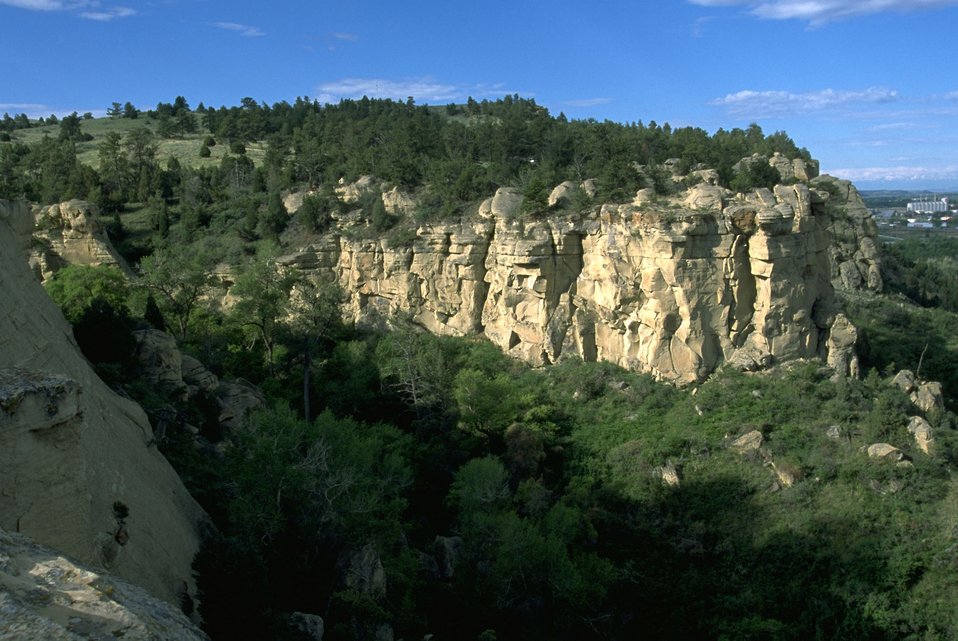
Sun shining on the sandstone cliffs in the Four Dances Natural Area